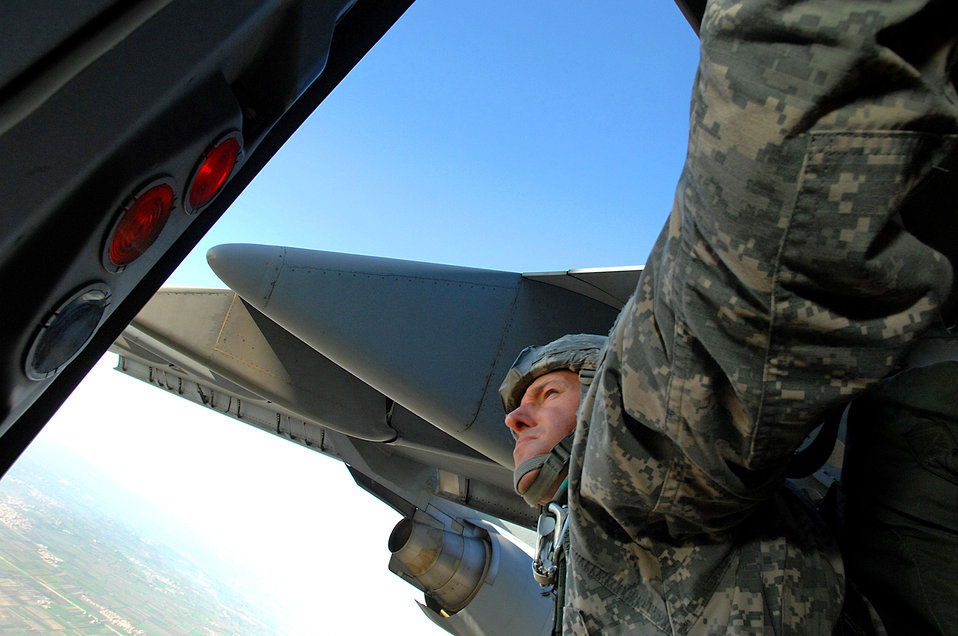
Exercise Bright Star 2007

An Army paratrooper from the 20th Engineering Brigade, 101st Airborne Division, Fort Campbell, Ky., prepares to parachute from a C-17 Globemaster III into Cairo, Egypt, Nov. 7 as part of Exercise Bright Star 2007. The C-17s are from Charleston Air Force Base, S.C.